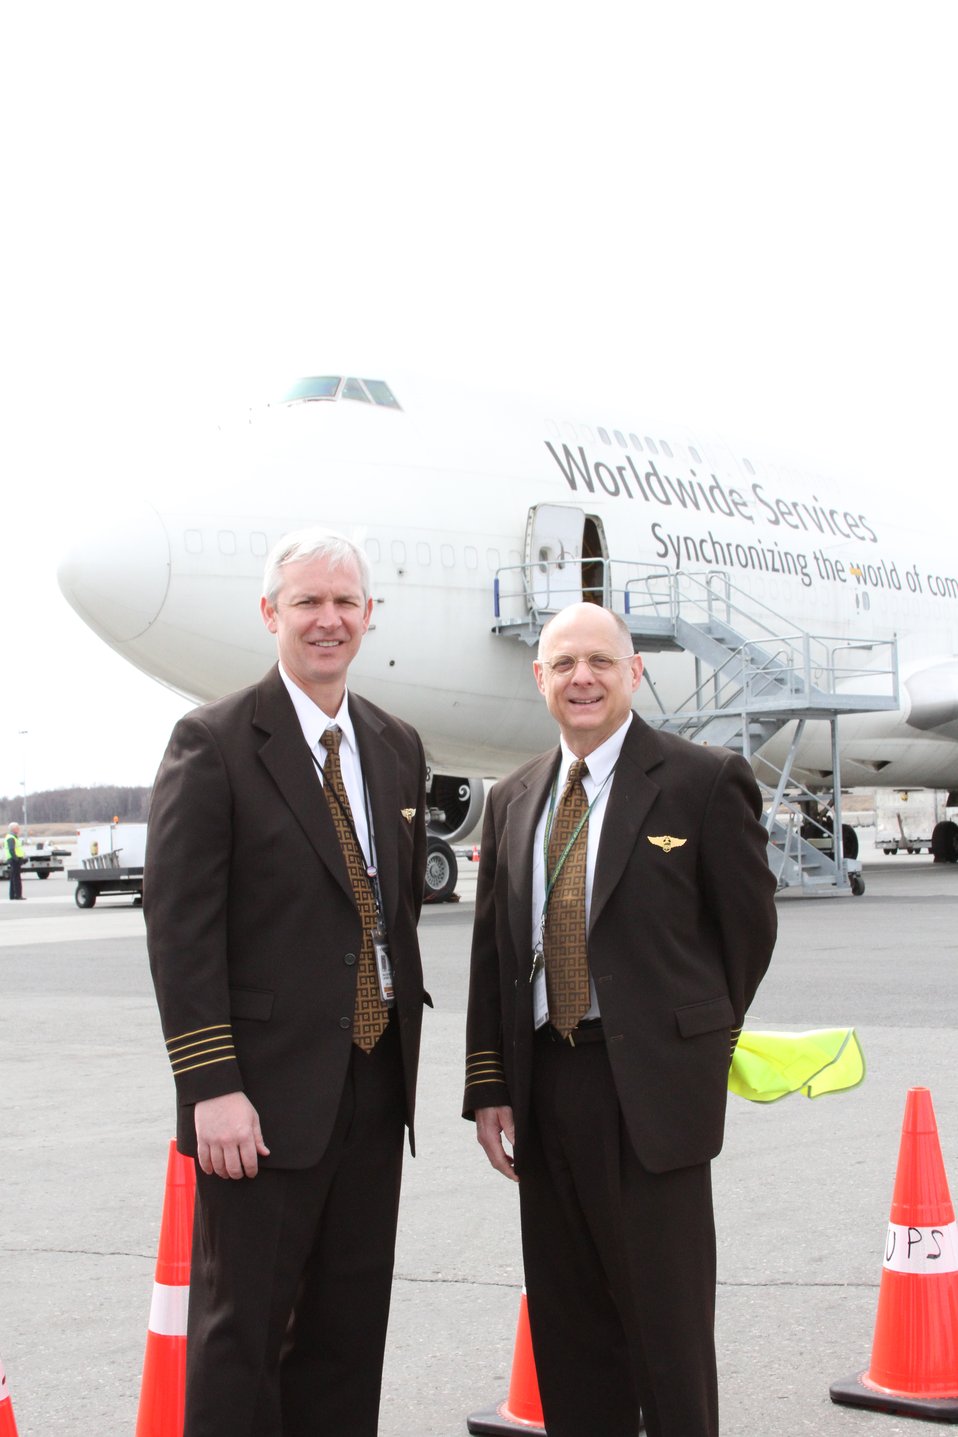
ups pilots